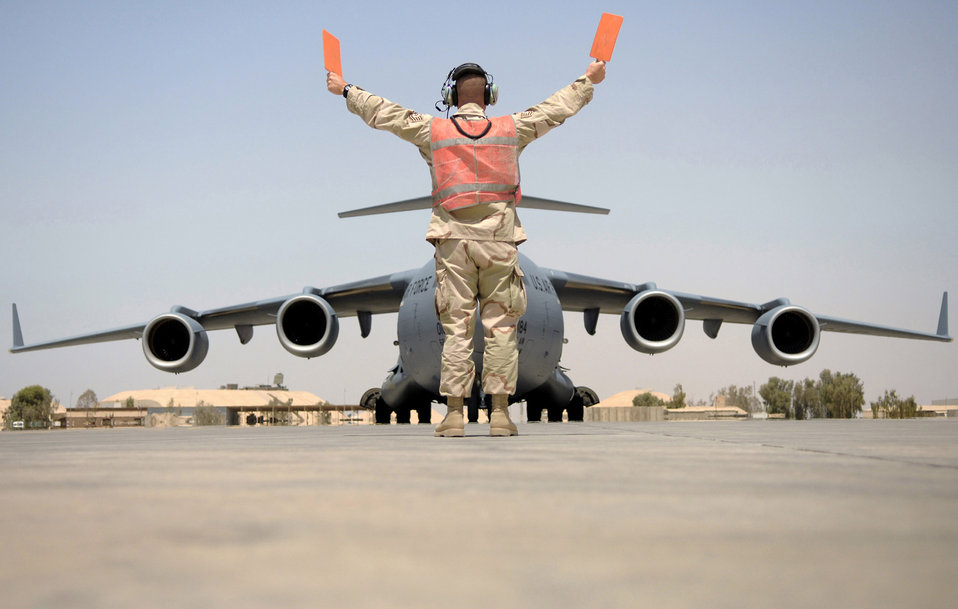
Conducting the flightline symphony

Tech. Sgt. Frank Wisnieski stops a C-17 Globemaster III May 12 at Balad Air Base, Iraq. Airmen work around the clock coordinating the arrival and departure of aircraft.